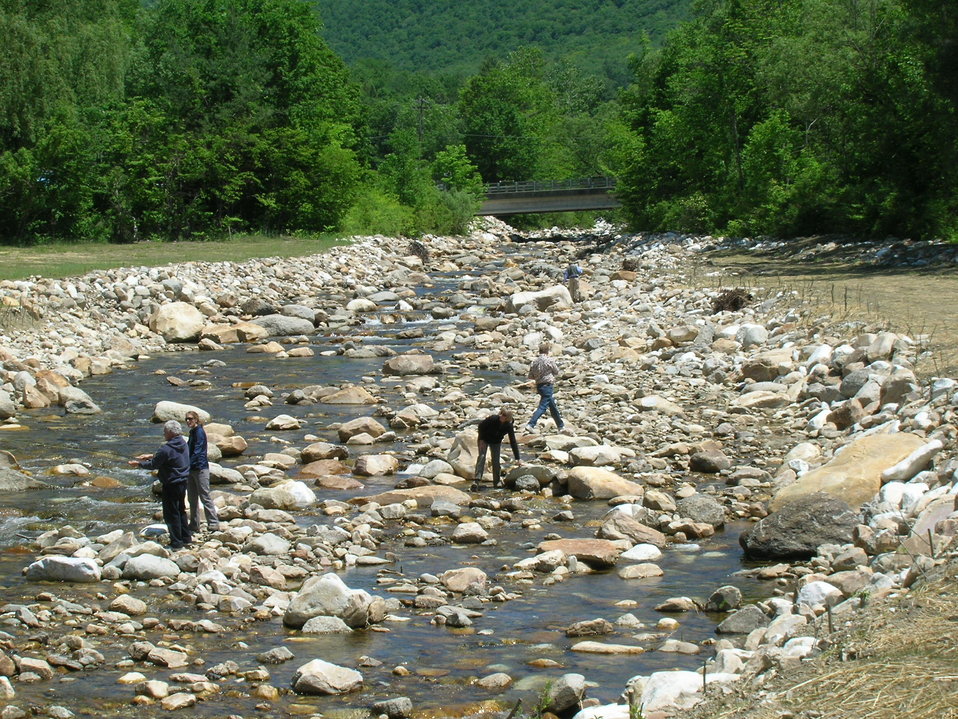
Briggsville Dam Removal Celebration